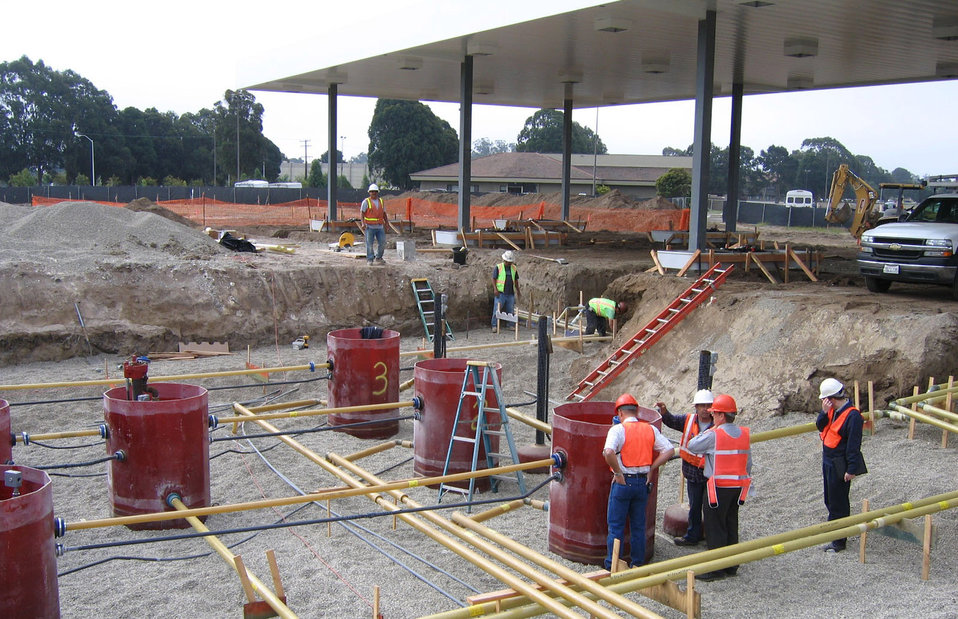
AFCEE, AAFES join forces to construct new facilities

Government contractors discuss the progress of the newly constructed Army and Air Force Exchange Service fuel station at Vandenberg Air Force Base, Calif. This is the first of many projects that AFCEE has teamed with AAFES to construct.